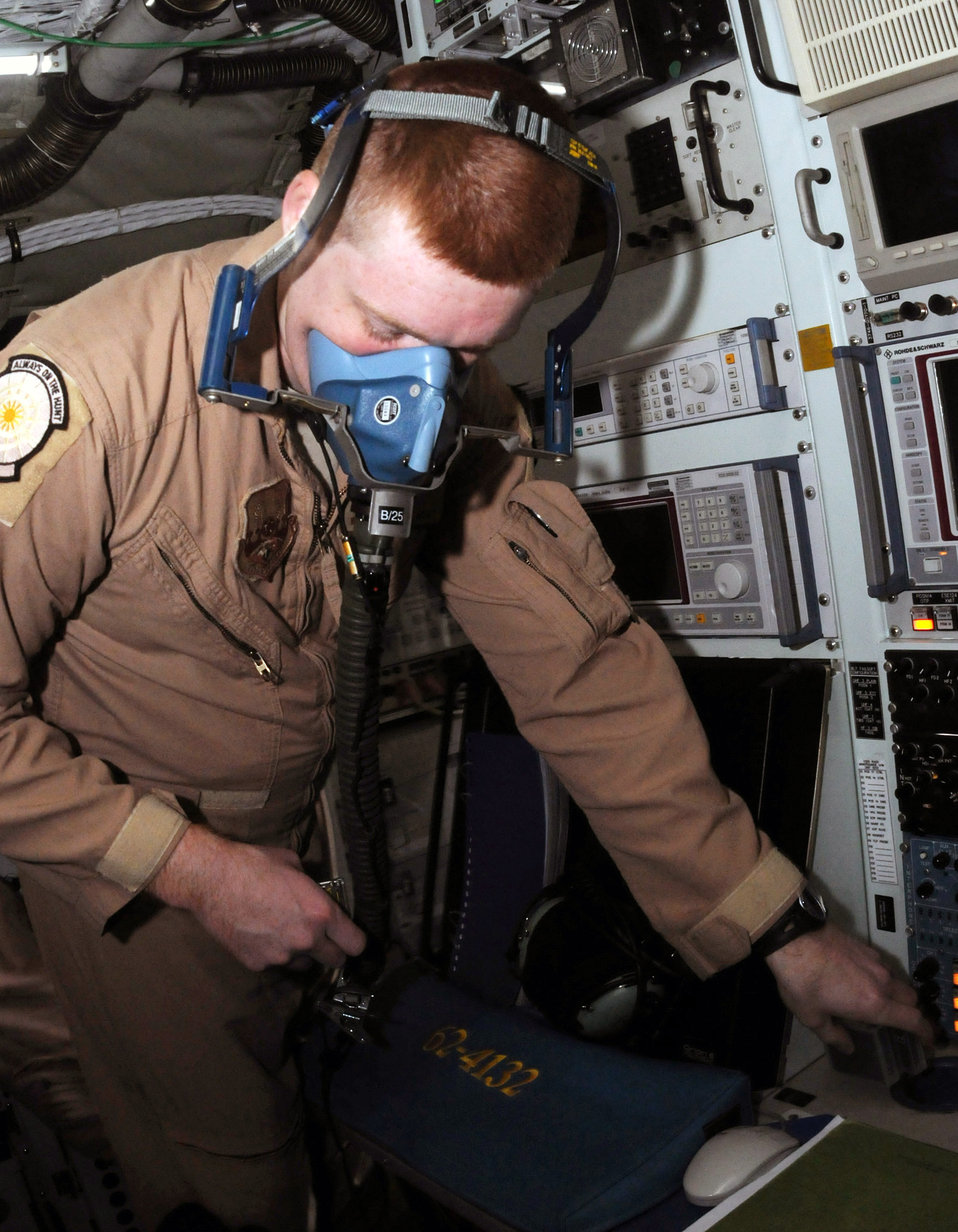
RC-135

Staff Sgt. William Bryan checks the oxygen flow inside a mask aboard a RC-135 Rivet Joint aircraft Jan. 30 in Southwest Asia. Cockpit crews, intelligence experts, electronic warfare officers, and in-flight maintenance technicians have rotated into and out of Southwest Asia along with the aircraft for a variety of duties over the past 17 years. Sergeant Bryan is an airborne systems engineer with the 763rd Expeditionary Reconnaissance Squadron and is deployed from Offutt Air Force Base, Neb.